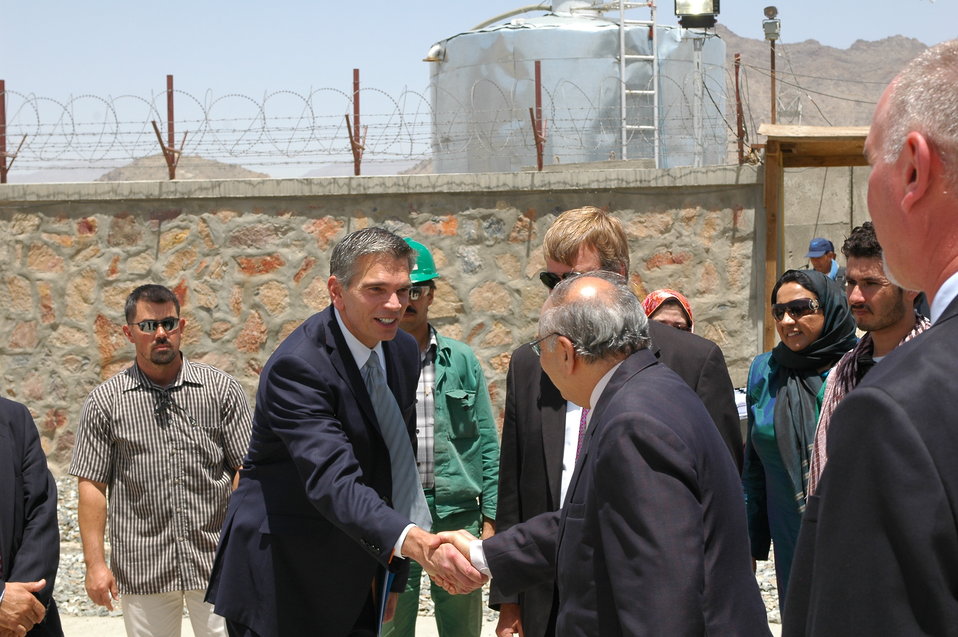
105 MW Tarakhil Power Plant Handover